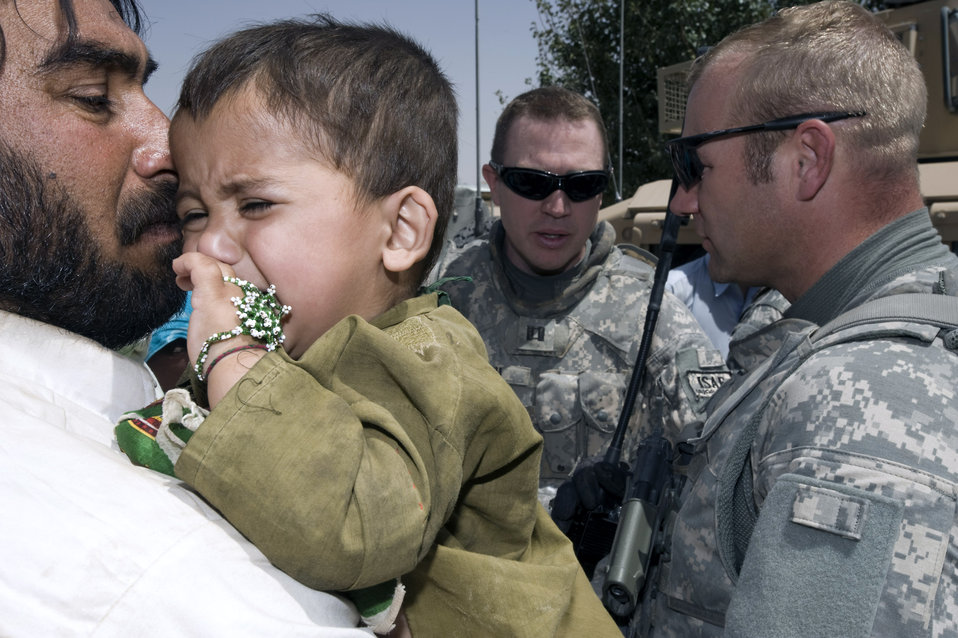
Zabul team combats malnutrition, unsafe water

Capt. Timothy Harrelson (center) and Army Maj. Trevor Nehls discuss care for a young Afghan boy who has a broken leg in Qalat, Afghanistan. Captain Harrelson and Major Nehls are members of the Zabul Provincial Reconstruction Team.